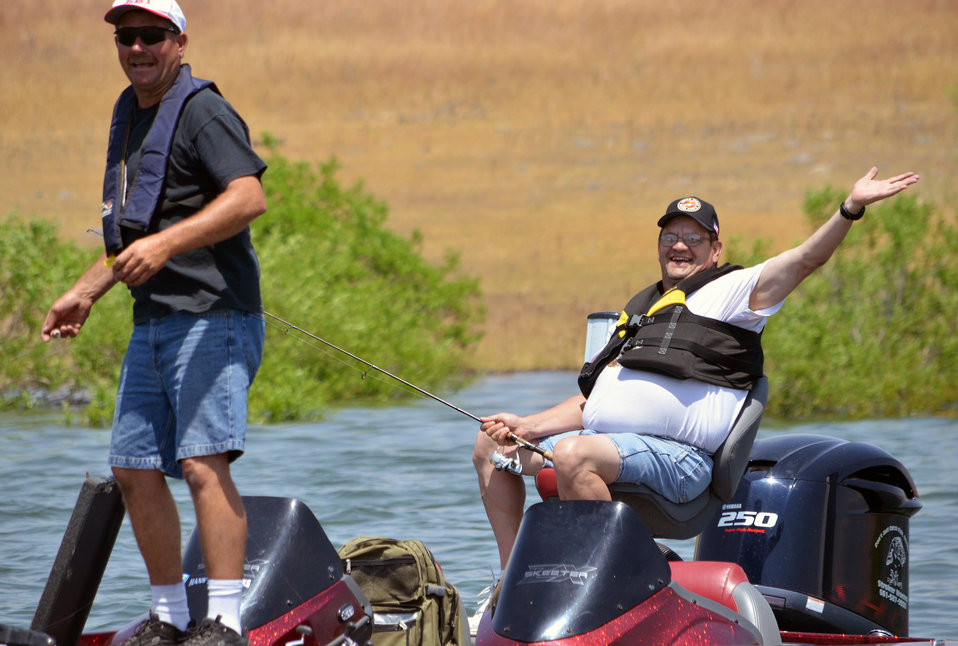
New buddies (“Take a Warrior Fishing” event at Success Lake)

Wounded warriors and their families enjoy a day fishing during the 'Take a Warrior Fishing' event at Success Lake, located near Porterville, Calif., May 4, 2013. This is the second year the U.S. Army Corps of Engineers Sacramento District has hosted the event. Photo cropped for emphasis.